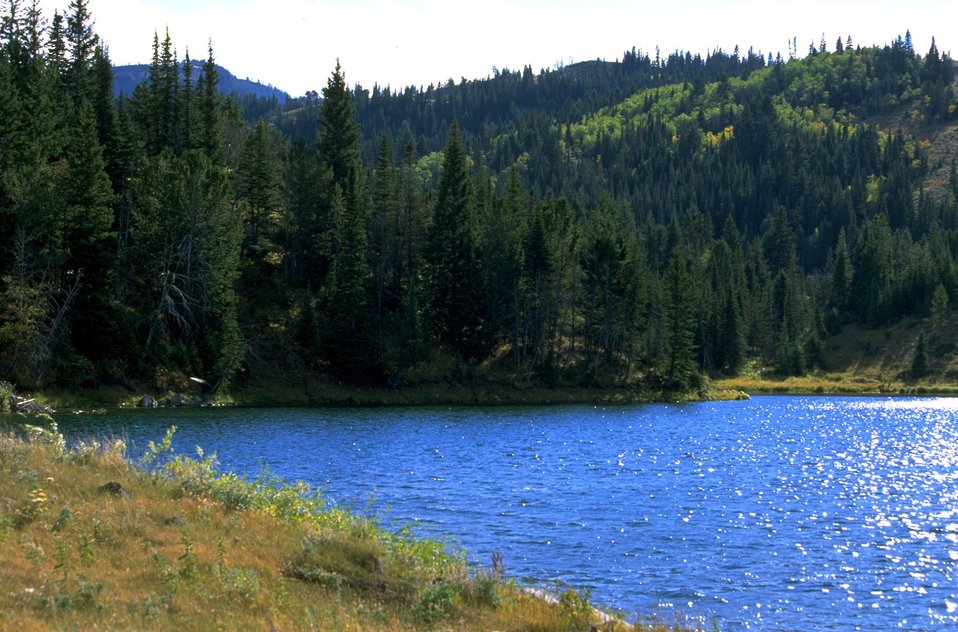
Lake and Trees